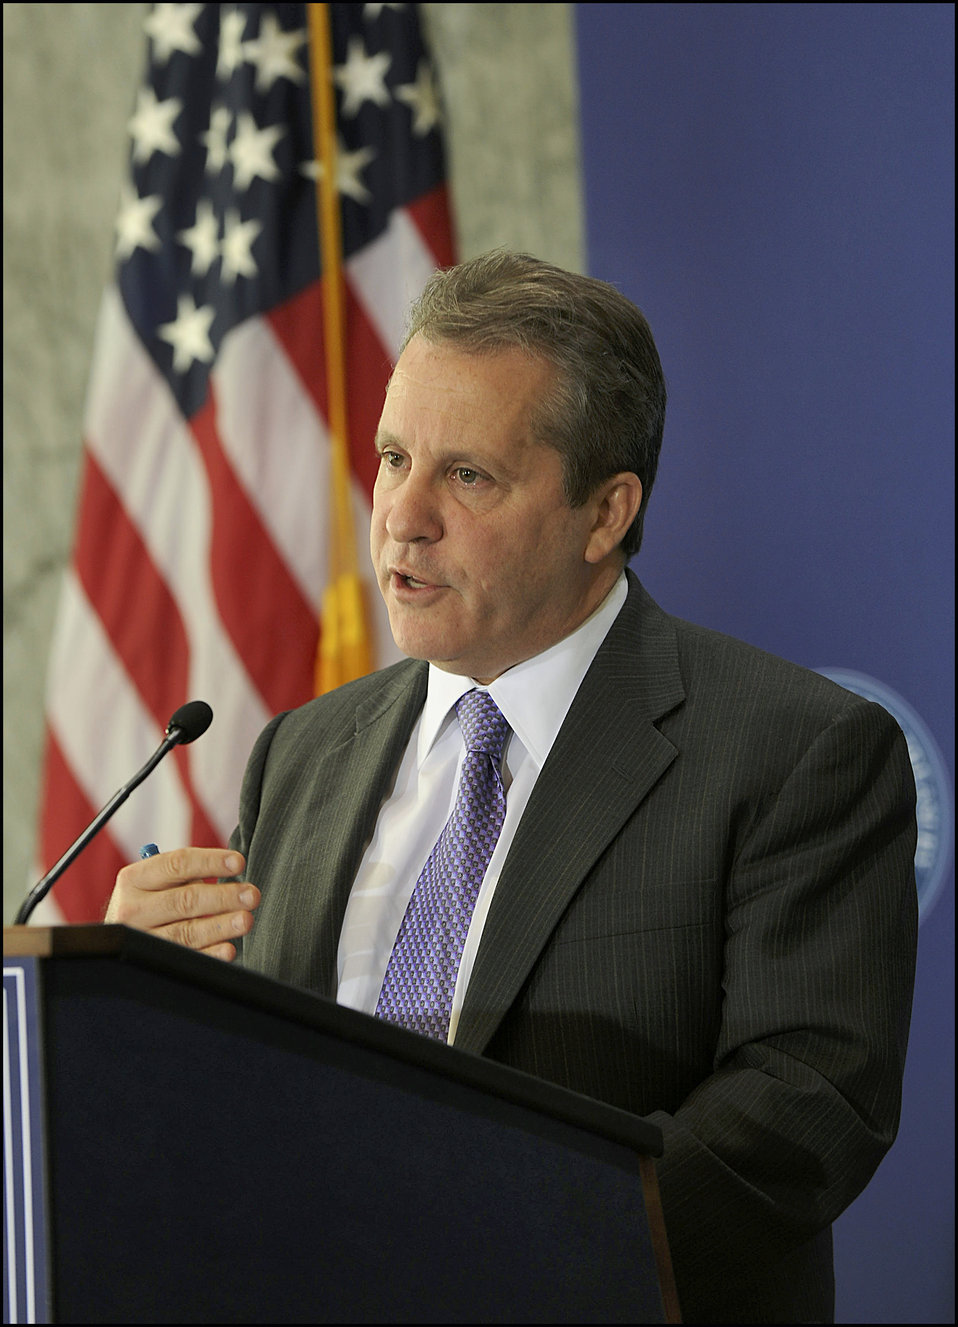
Access to Capital Conference

Director of the National Economic Council Gene Sperling provided closing remarks.